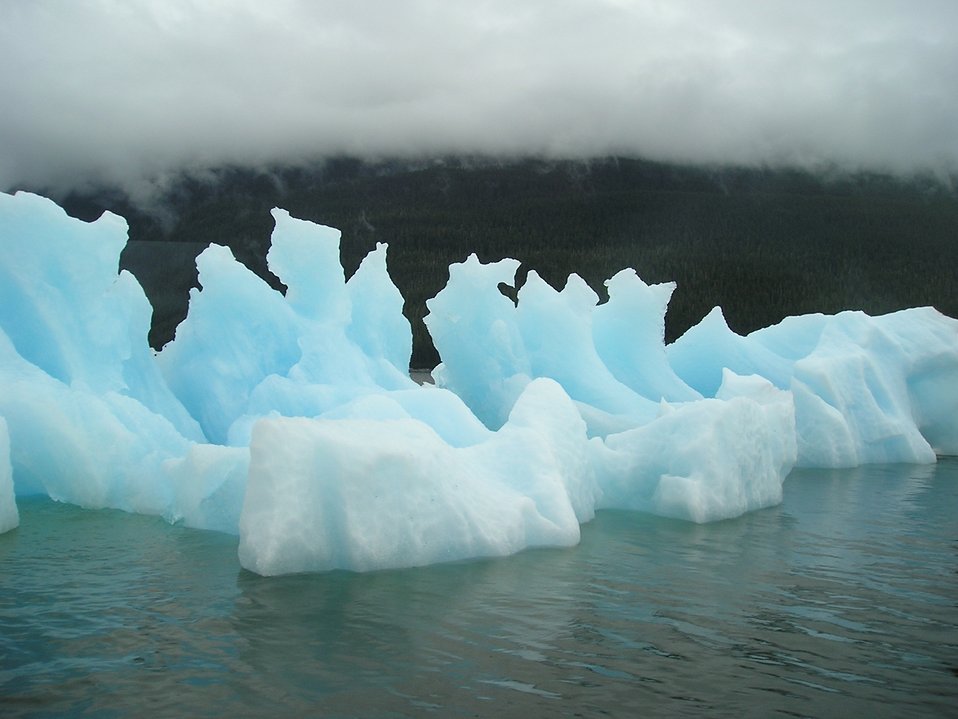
An iceberg floating out of Tracy Arm